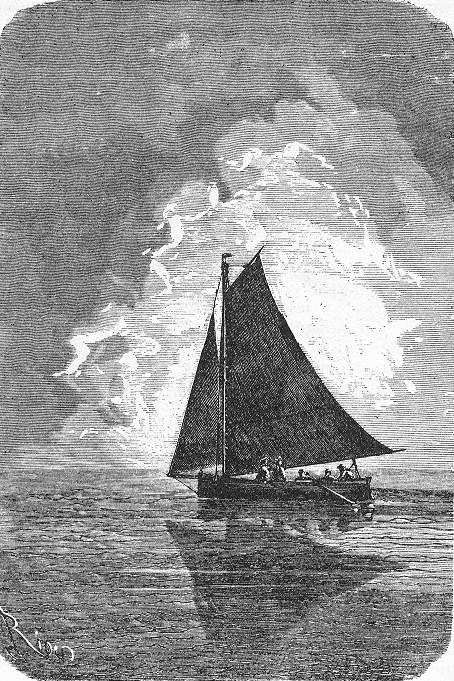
An illustration from Jules Verne's novel 'Journeys and Adventures of Captain Hatteras', part II: 'The Field of Ice' drawn by Édouard Riou and/or Henri de Montaut. Polski: Ilustracja powieści Juliusza Verne'a 'Podróże i przygody kapitana Hatterasa', części II: 'Pustynia lodowa' autorstwa Édouarda Riou i/lub Henri de Montauta. Français : Jules Verne: 'Voyages et aventures du capitaine Hatteras - Le désert de glace', Édouard Riou et Henri de Montaut.